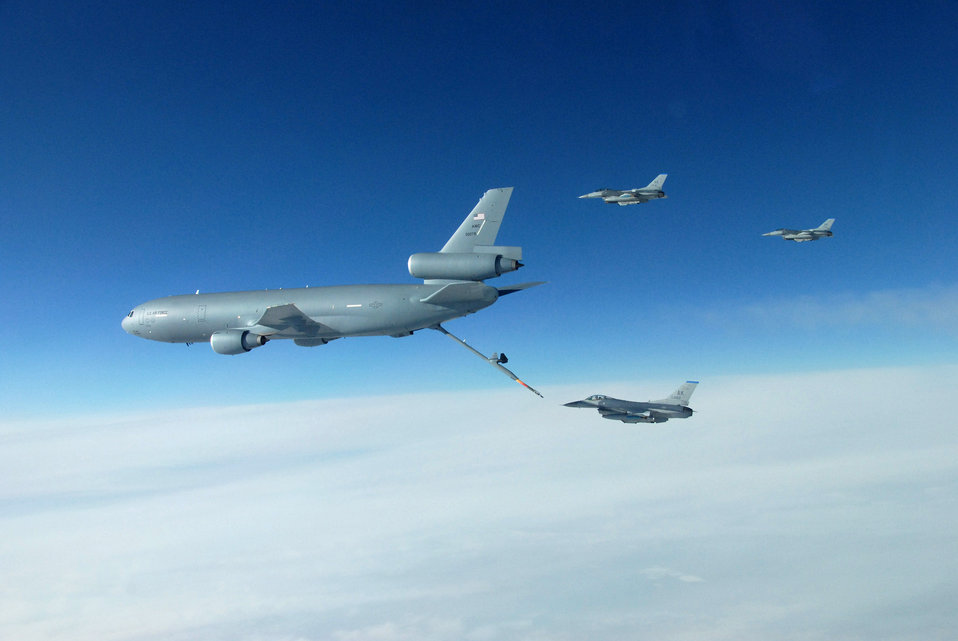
Airpower summary for June 19, 2007

Three F-16 Fighting Falcons refuel behind a KC-10 Extender. Airpower for coalition operations are sustained through mid-air refueling by KC-10s and KC-135 Stratotankers. Coalition tankers flew 59 sorties and offloaded approximately 3.3 million pounds of fuel June 18.